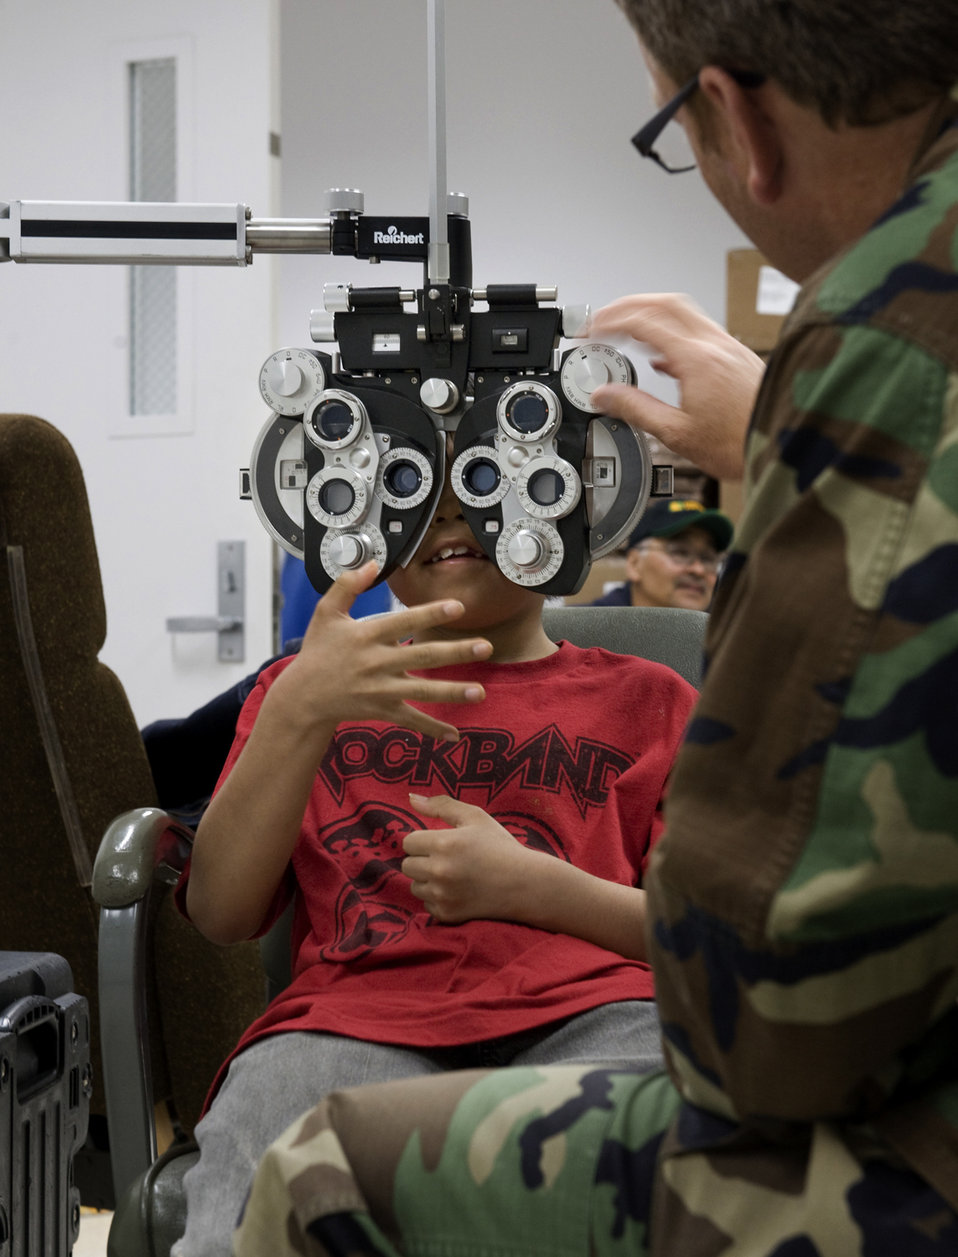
New Vision

Jason Ferreira, 8-years-old, signals answers during an eye exam to fine- tune the prescription for his new eye-glasses during Operation Arctic Care April 12, 2010, in Kotzebue, Alaska.